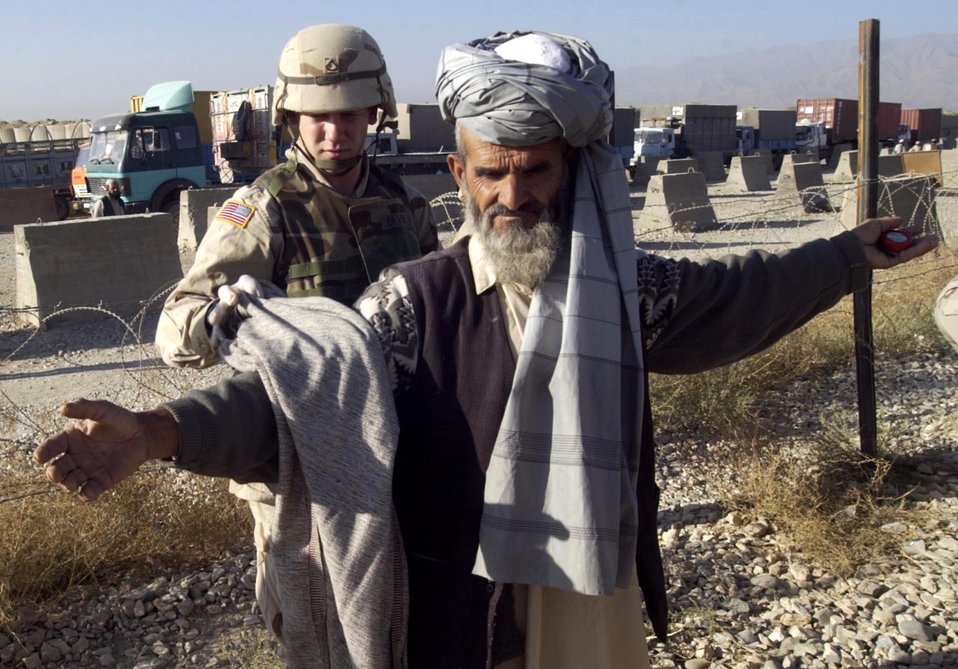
Security check

BAGRAM AIR BASE, Afghanistan -- Army Private 1st Class Matthew Devine checks a worker before he can access the installation. Contracted workers erect huts and perform other duties. They must be frisked, screened and have all clothing checked for weapons or other harmful materials.